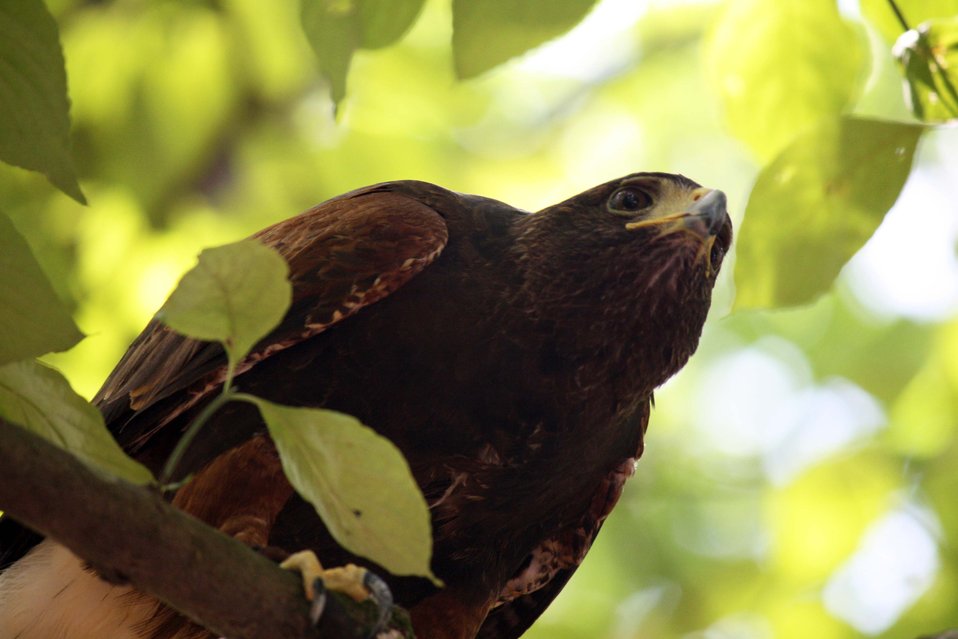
Harris's hawk

Credit: Chris Poulin/ USFWS

Trained harris's hawk at the 2010 Boy Scout Jamboree.